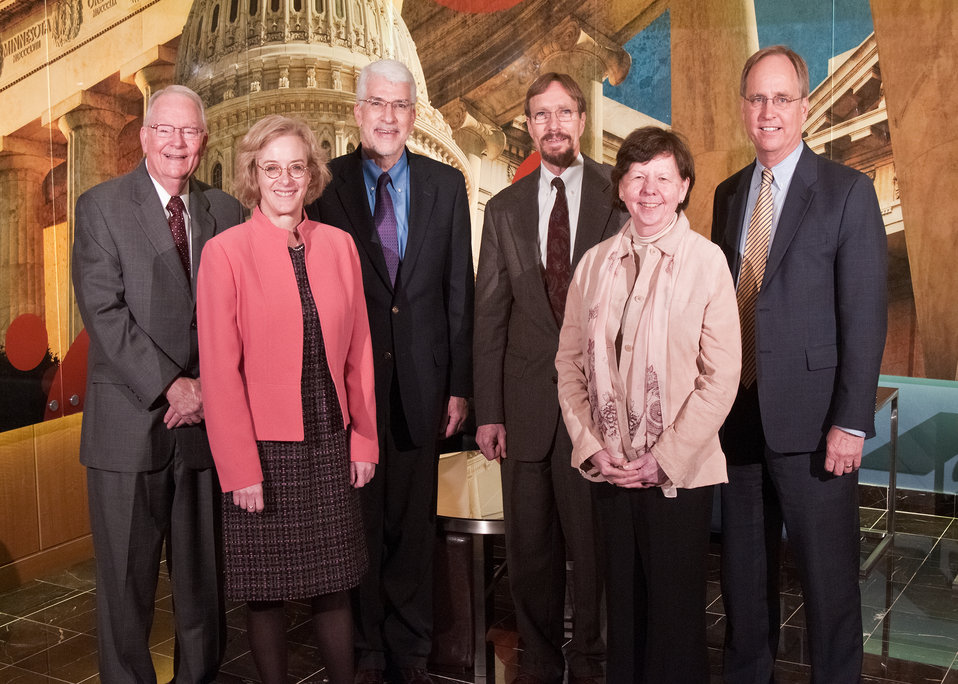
Back row from left: John E. Lee, Jr., Former Administrator, Economic Research Service, United States Department of Agriculture, 1982-1993, Keith Collins, Former United States Department of Agriculture Chief Economist, 1994-2008, Gary Blumenthal, President and Chief Executive Officer, World Perspectives, Inc. and Jon Scholl, President, American Farm Land Trust. Front row from left: Katherine Smith, Administrator, United States Department of Agriculture, Economic Research Service and Eileen Kennedy, Dean, Friedman School of Nutrition Science Policy, Tufts University were panelists at the “ERS: Celebrating 50 Years of Excellence in Economic Research” session at the World Agricultural Outlook Board Forum in Crystal City, VA, on Friday, February 25, 2011.